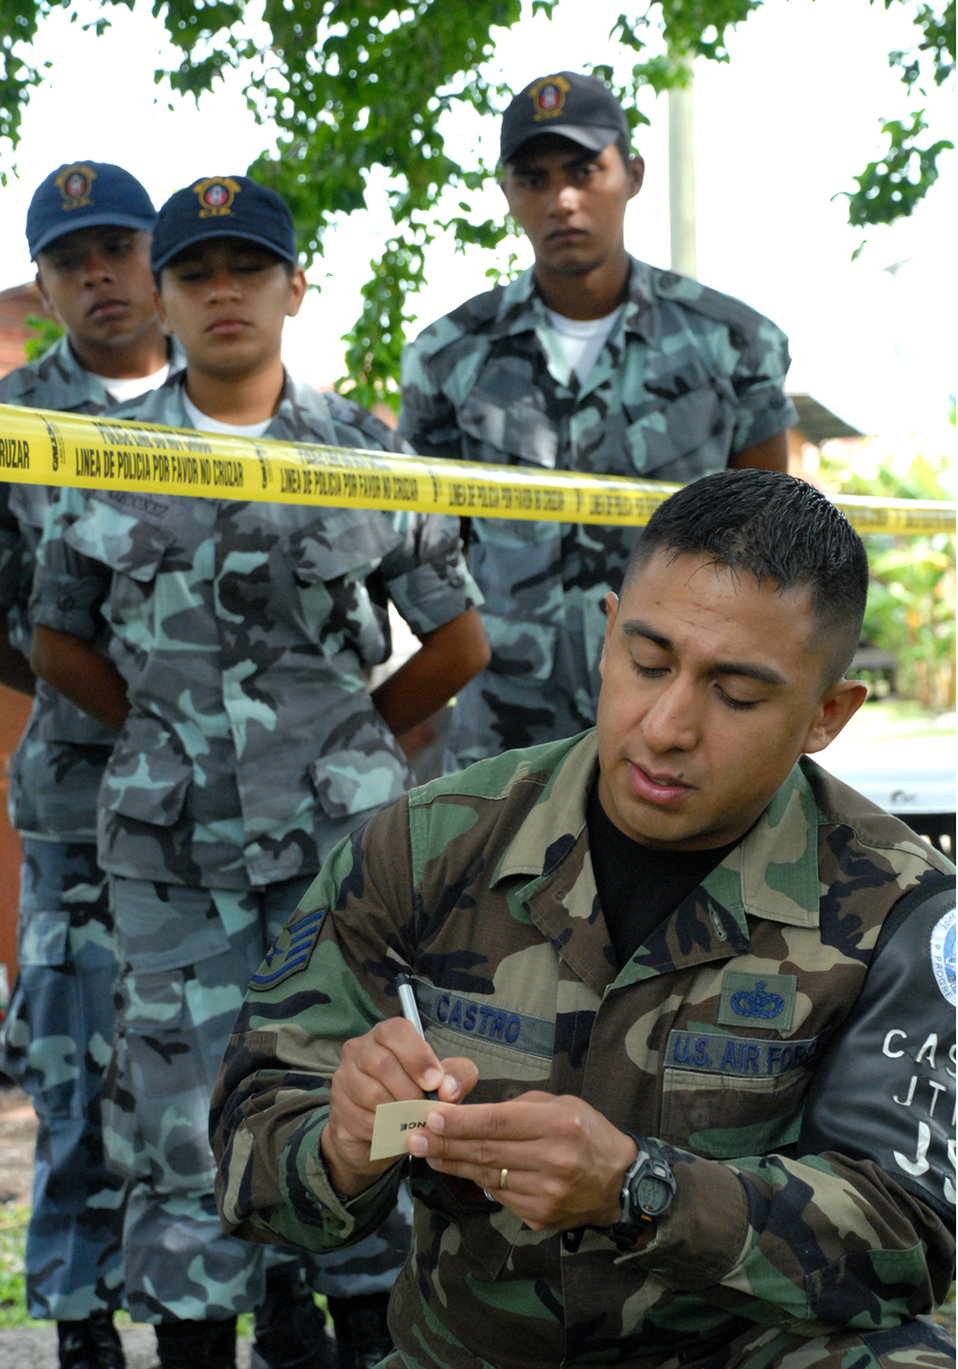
CSI Honduras: JSF teaches crime scene processing to Honduran police

Staff Sgt. Edgar Castro, joint security forces, marks simulated evidence during a training class with police from nearby Comayagua and La Paz police divisions, as well as cadets from the La Paz Police Academy. The crime scene processing course is one in a series of classes taught this year, with other lessons involving handcuff procedures, high-risk traffic stops and riot control.